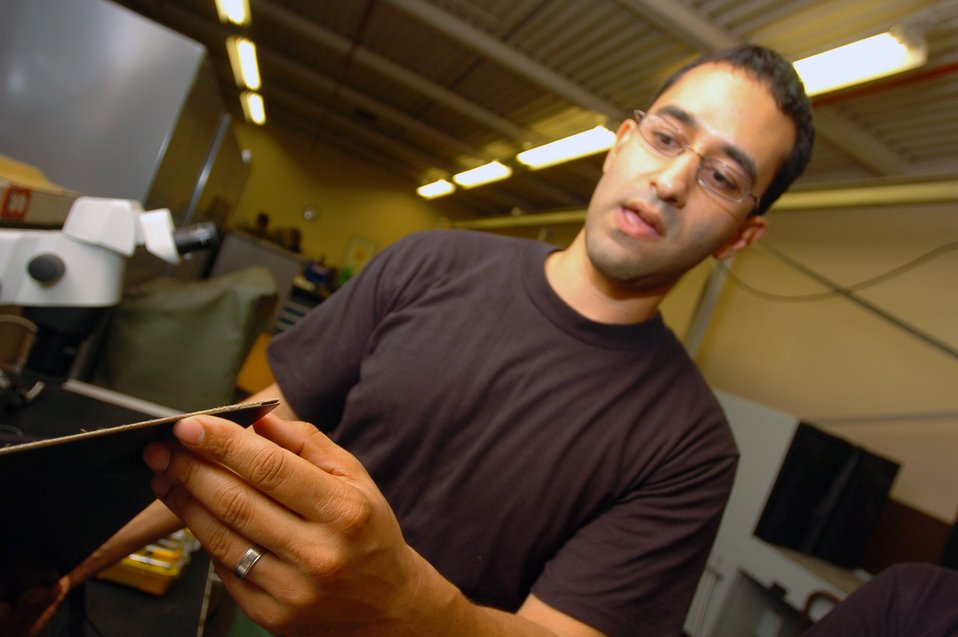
Fab flight craftsmanship reaches entire base

Tech. Sgt. Antonio Mercado, a reservist from McChord Air Force Base, Wash., shows an example of the damage the sonogram can detect that can't be seen by looking at the aircraft at Hickam Air Force Base, Hawaii.